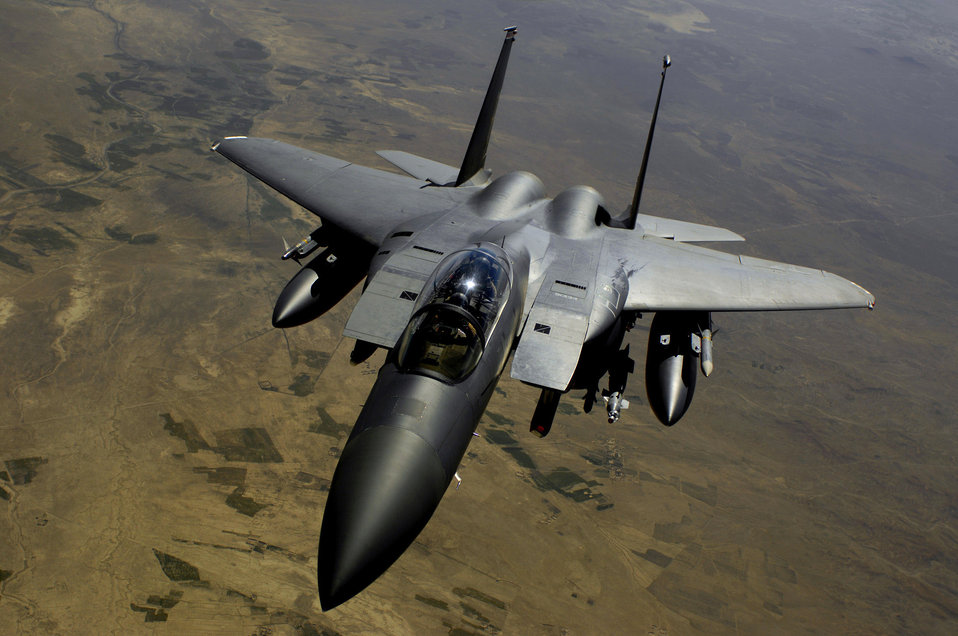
Jan. 9 airpower summary: F-15Es perform shows of force

An F-15E Strike Eagle aircraft returns to the fight after receiving fuel from a KC-135R Stratotanker during a mission over Afghanistan. The F-15E provides close-air support and armed aerial overwatch to deter enemy activities.